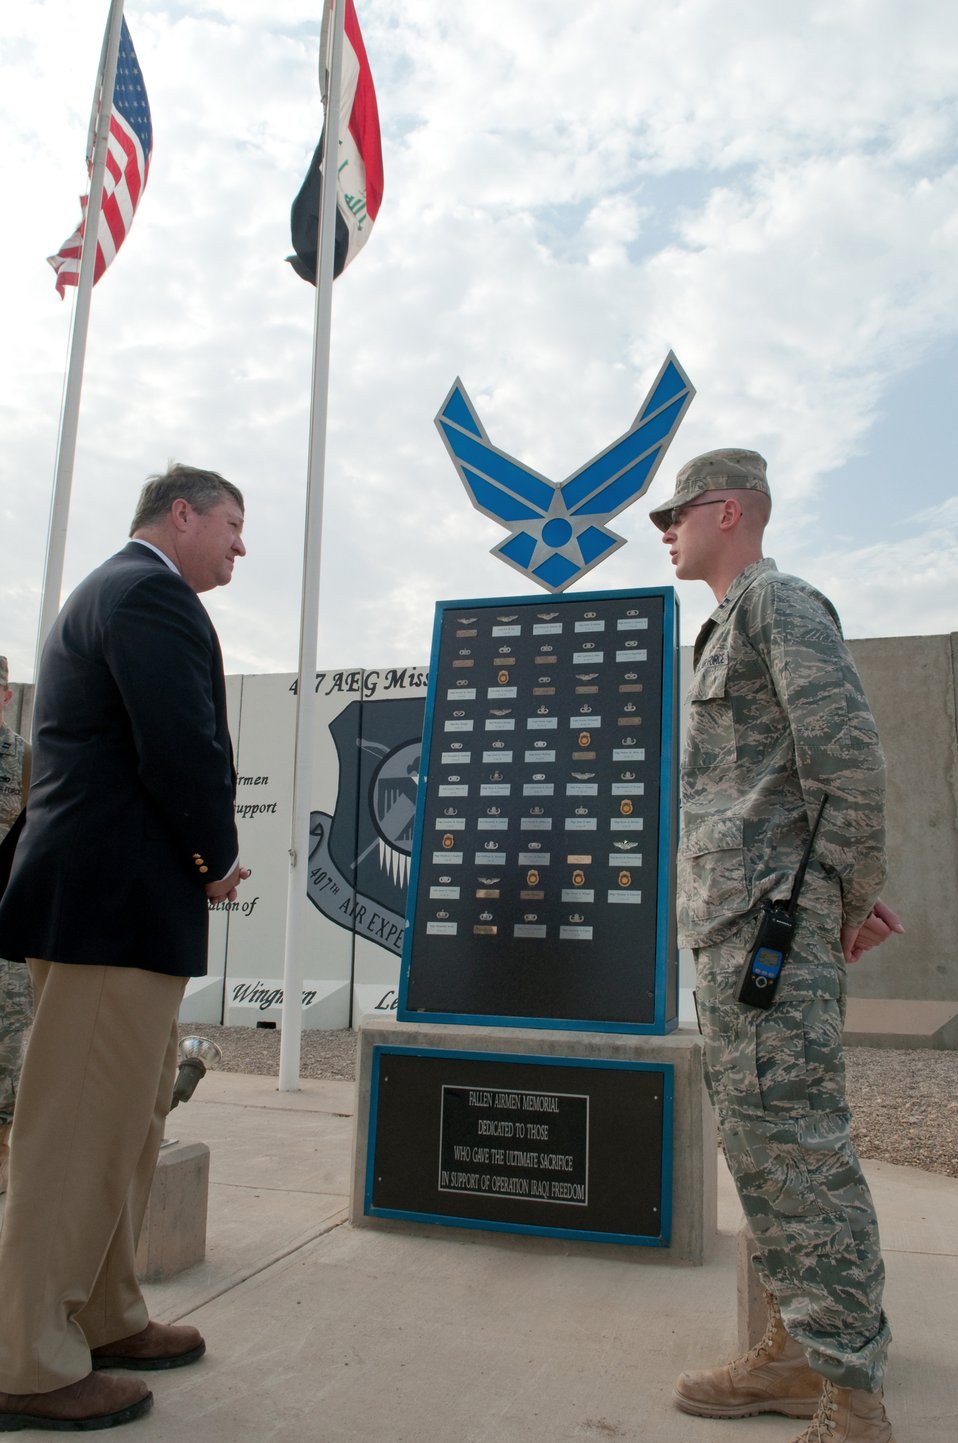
Secretary of the Air Force visits Ali Airmen

Secretary of the Air Force Michael Donley and Capt. Nicholas D. Kuc discuss the memorial at Ali Base, Iraq, during the secretary's visit Jan. 31, 2010. The memorial is dedicated to fallen Airmen who gave the ultimate sacrifice in support of Operation Iraqi Freedom. Captain Kuc is with the 407th Expeditionary Communications Squadron and deployed from Tinker Air Force Base, Okla.